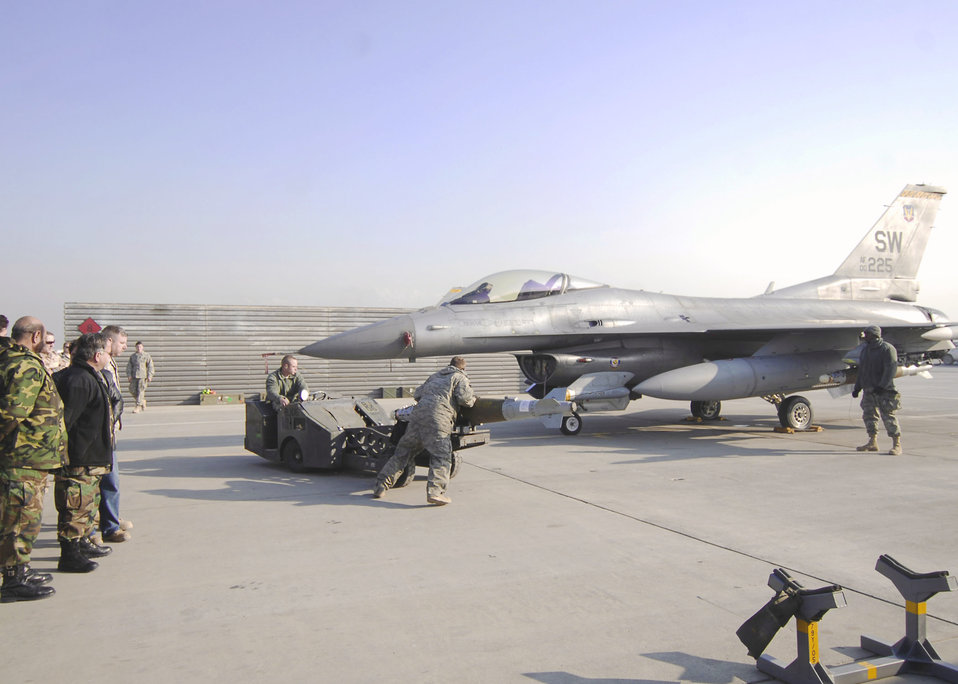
Partnership between air forces in the making

Staff Sgt. Sam Arpy drives a bomb-lift truck while Airman 1st Class John Ackerman assists him to the bomb rack of an F-16 Fighting Falcon Dec. 19, 2009, at Bagram Airfield, Aghanistan. Airman 1st Class Carl Jones (far right) spots Sergeant Arpy. All weapons load crew Airmen are deployed from Shaw Air Force Base, S.C. and were demonstrating proper loading procedures for Afghan National Army Air Corps Brig. Gen. Abdul Wahab Wardak and other officials, Dec. 19, 2009.